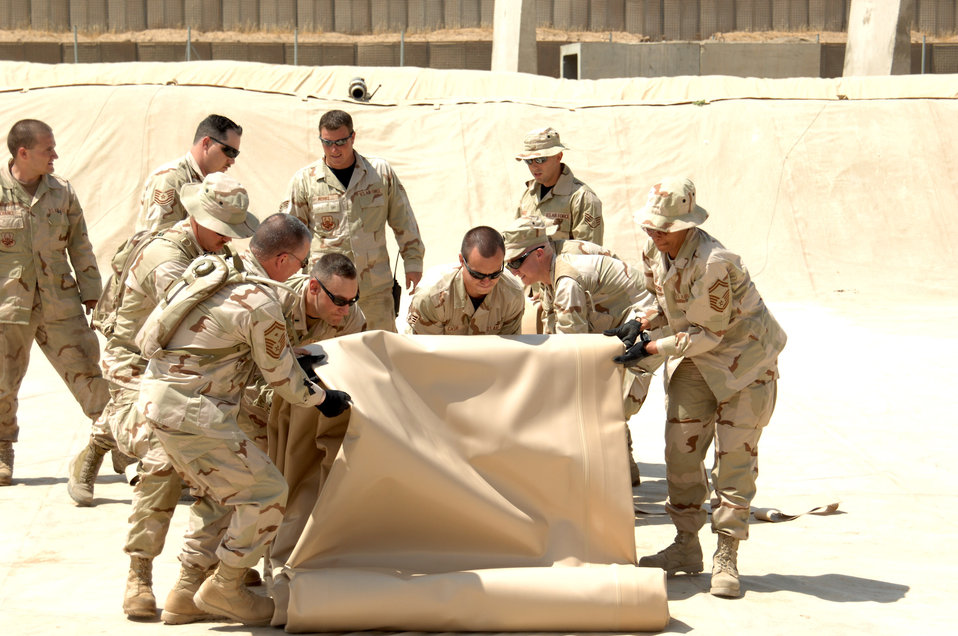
Kirkuk Airmen upgrade fuel storage

Airmen in the 506th Expeditionary Logistics Readiness Squadron roll out a new fuel bladder in a fuel pit June 19 at Kirkuk Regional Air Base, Iraq. The bladder will be filled with JP-8 jet fuel. Fuel storage bladders are collapsible, flexible storage containers that provide temporary as well as long term fuel storage.